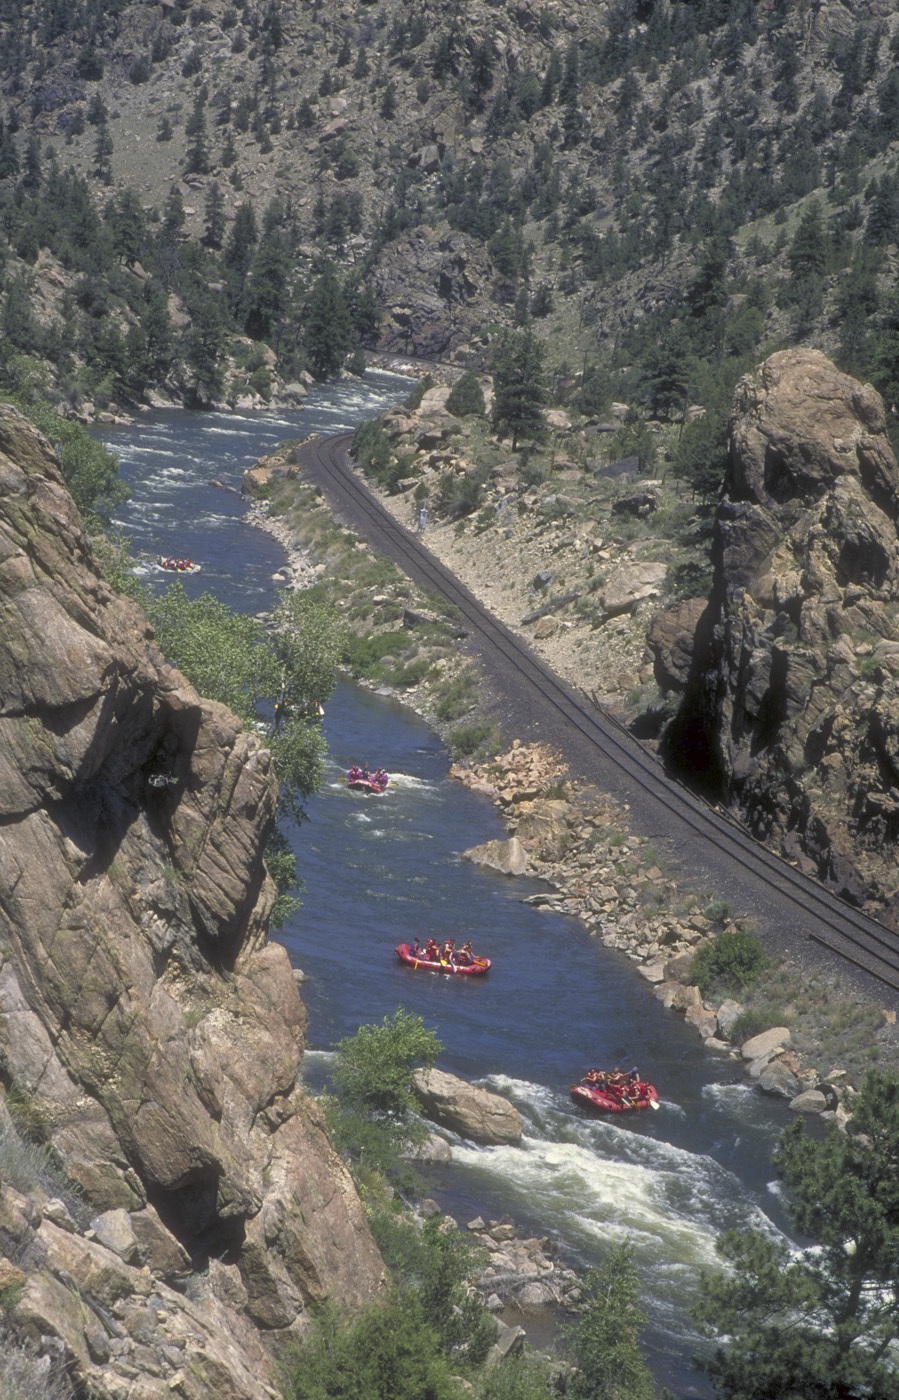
Rafters on the Arkansas River